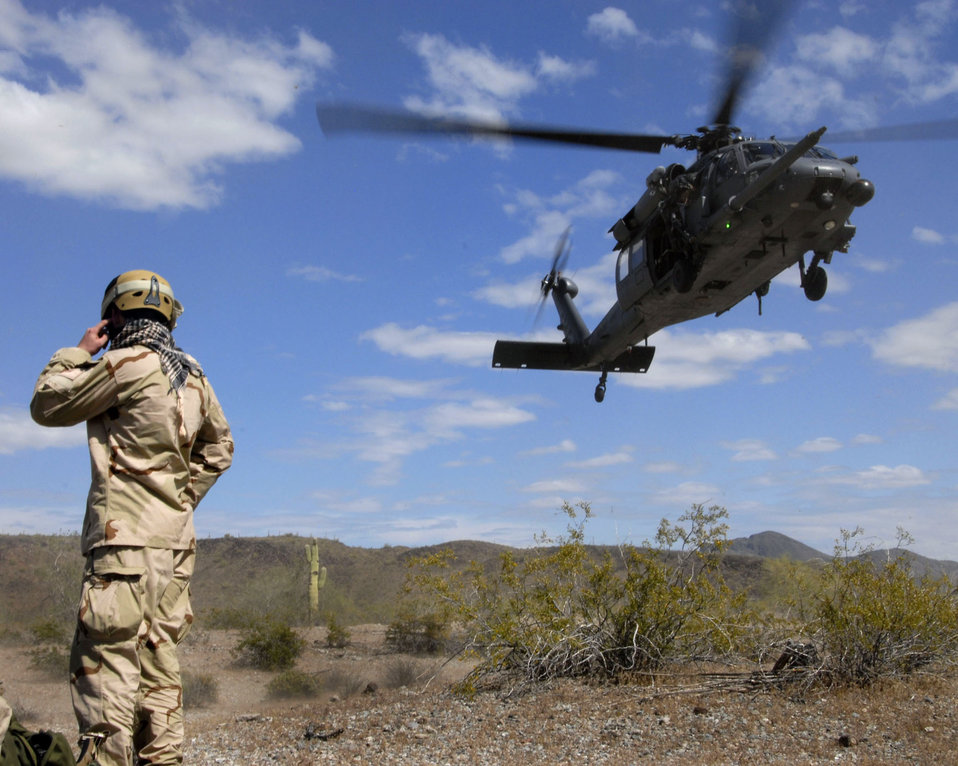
Airmen train on combat search, rescue missions

An HH-60G Pave Hawk rescue helicopter with the Alaska Air National Guard lands at the Barry M. Goldwater Range April 19, 2010, in the Sonoran Desert, Ariz.